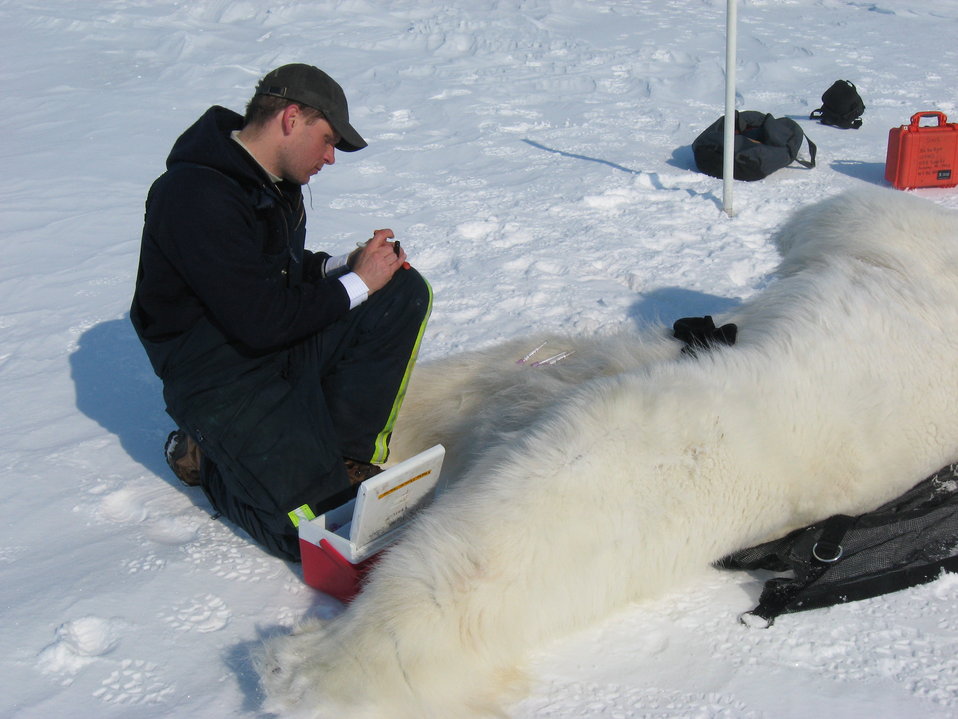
A Polar Bear Biologist Labels Blood Samples from a Bear

A United States Fish & Wildlife Service polar bear biologist labels blood samples taken from a bear being examined.